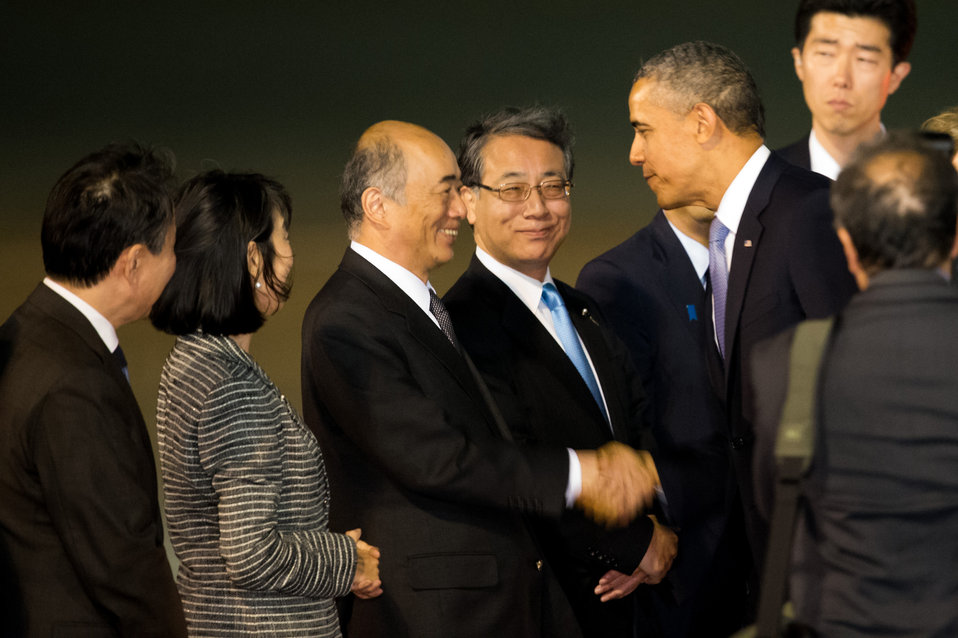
President Obama is Greeted by Japanese Officials Upon Arrival in Tokyo

U.S. President Barack Obama arrives at Tokyo International Airport and is welcomed by Japanese Ambassador to the United States Kenichiro Sasae and other Japanese officials on April 23, 2014.